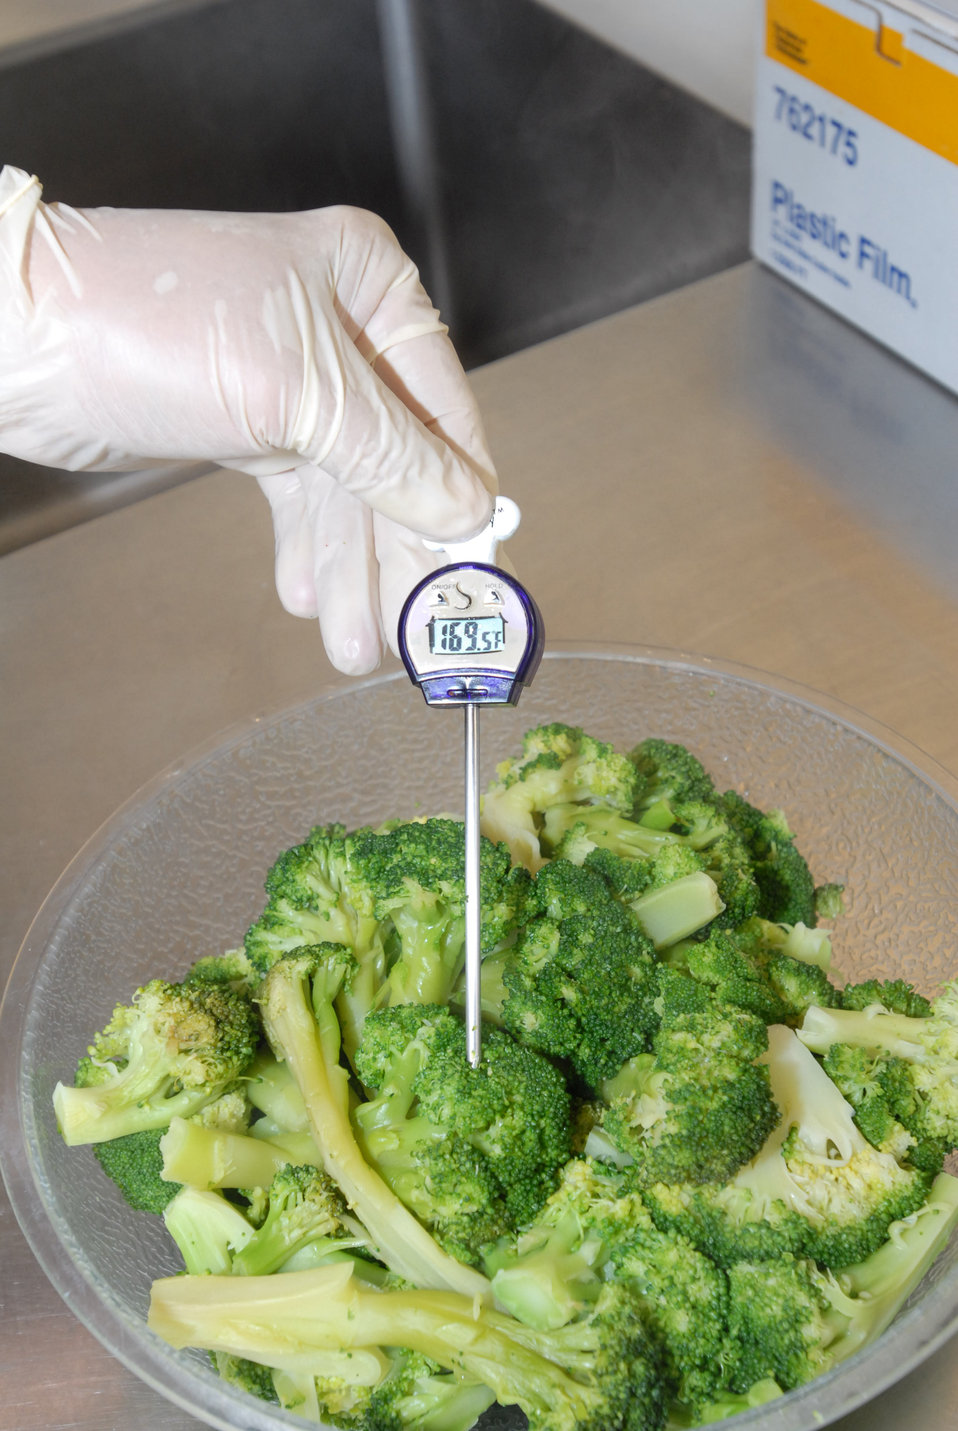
Food prepared at the Higher Horizons Day Care Center in Bailey Crossroads, VA., is cooked and served at the proper temperature according to the U.S. Department of Agriculture’s (USDA) Food Safety and Inspection Service (FSIS) standards on October 25, 2006. USDA’s Food Nutrition Service’s (FNS) Child and Adult Care Food Program (CACFP) and Head Start program play a vital role in improving the quality of day care for children and elderly adults by making care more affordable for many low-income families. Each day, 3.2 million children receive nutritious meals and snacks through CACFP. The Head Start program promotes a nutritious and active live style.